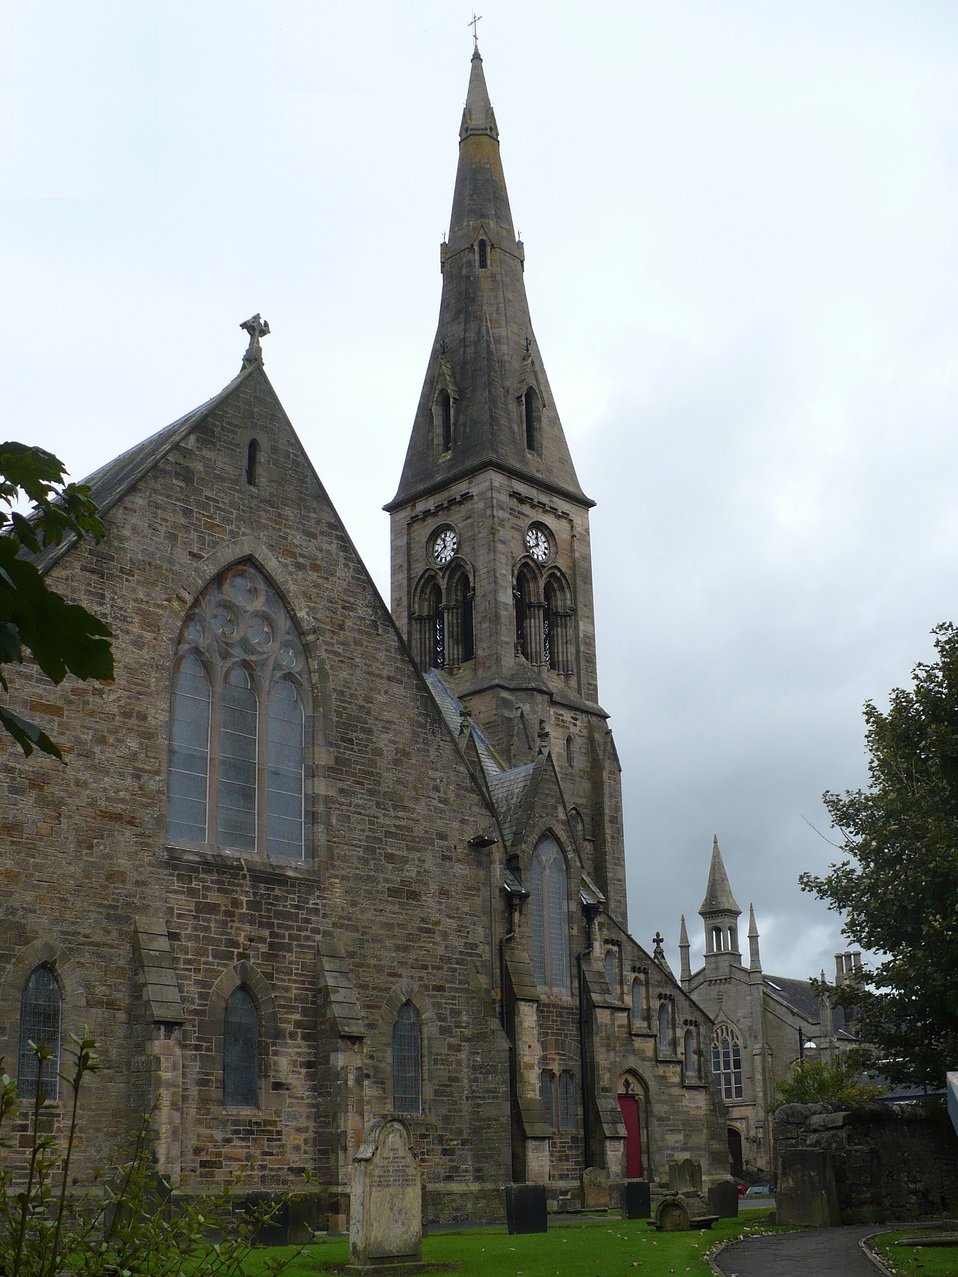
St. Margaret's Church with Trinity Church in the background. Dalry, North Ayrshire, Scotland